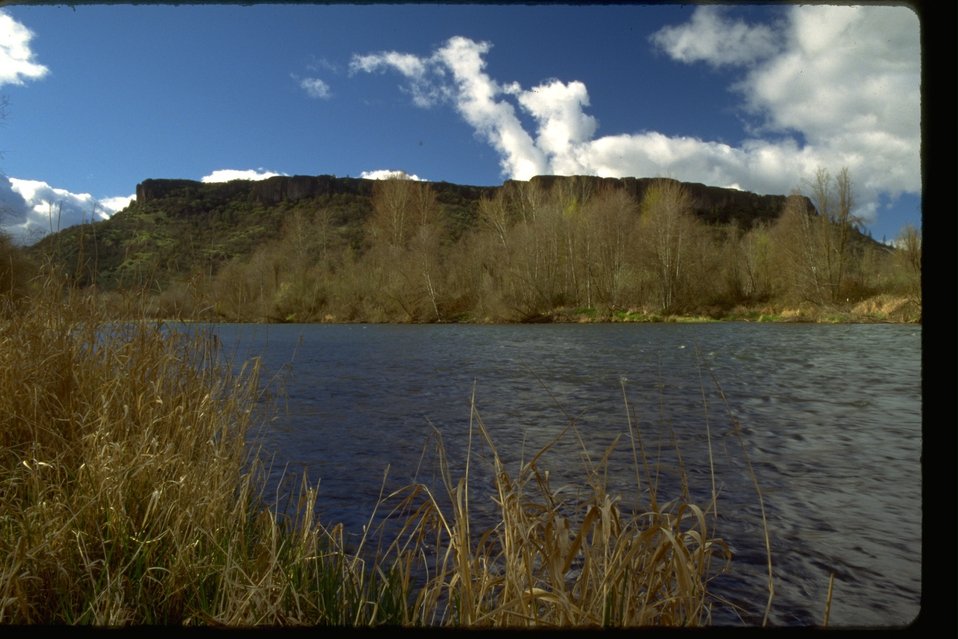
Lower Table Rock from the Rogue River.